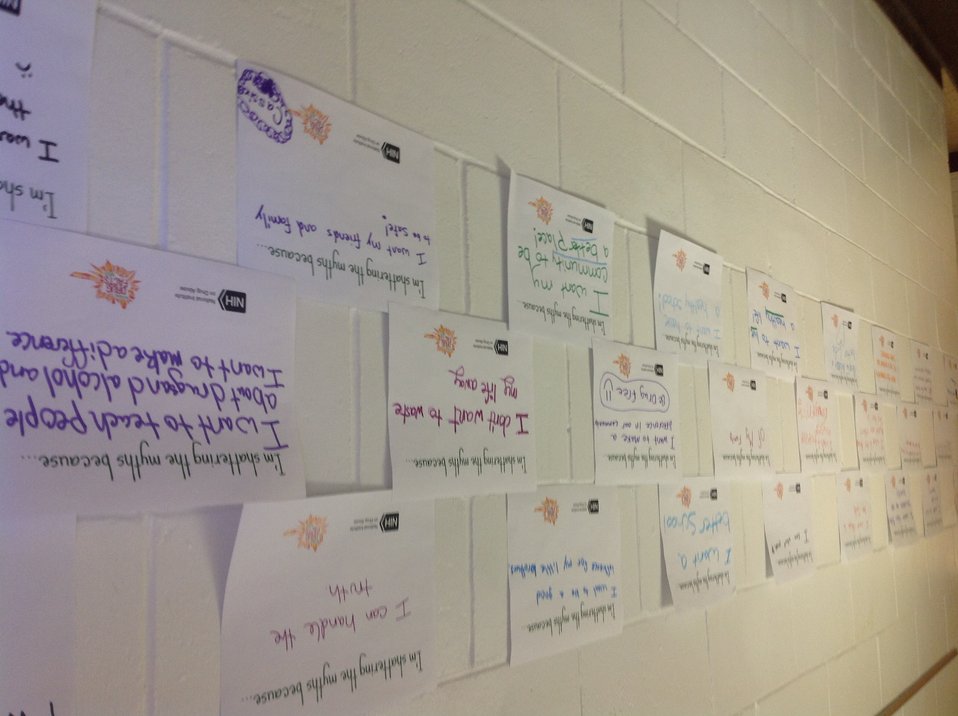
I'm Shattering the Myths Because...

Teenagers from the Van Buren County SAFE Coalition's, Youth Leadership Council (YLC) in Keosauqua, Iowa participate in various events during National Drug Facts Week, 2014.